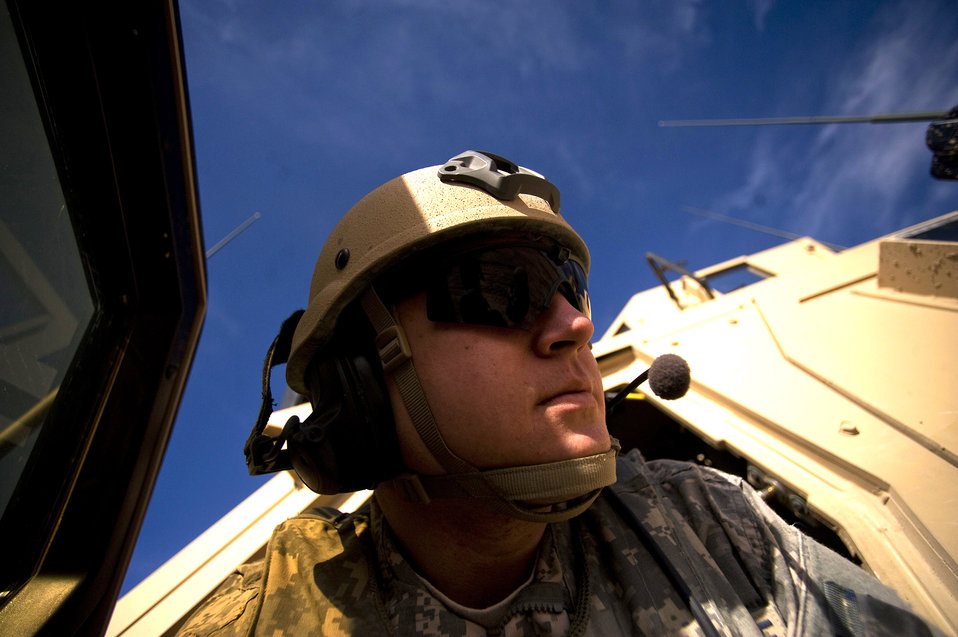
Last frontier for tactical air control

Airman 1st Class Brandon Shamhart listens to a C-130 Hercules aircrew via his radio Feb. 16, 2011, at Forward Operating Base Lagman, Afghanistan. Airman Shamhart ensured the dirt landing zone was safe for aircraft to land and depart. Airman Shamhart is a radio operator maintenance and drive assigned to the 807th Expeditionary Air Support Operations Squadron.